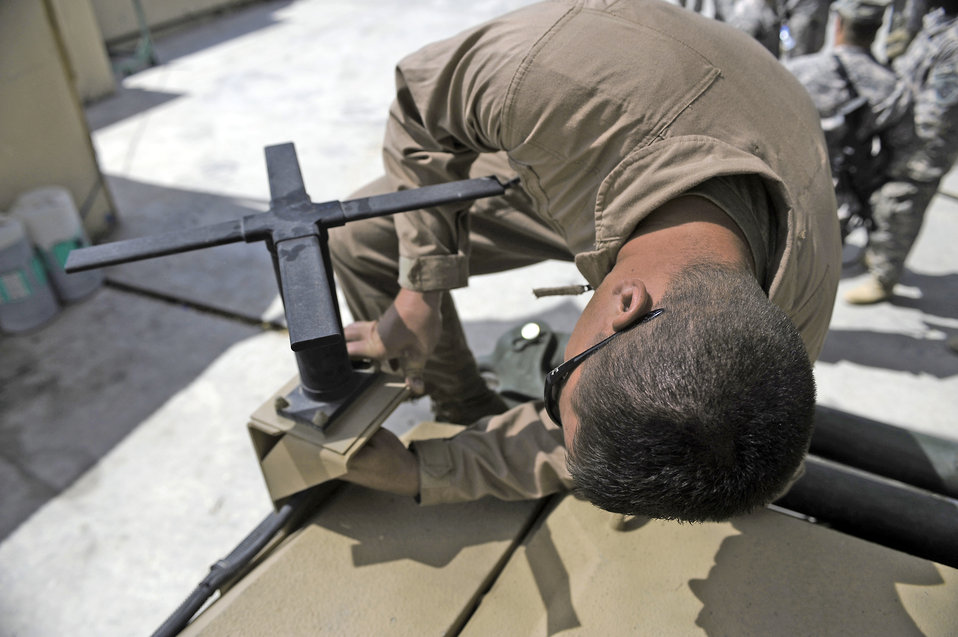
Tactical Comm Airmen keep military ops online, on target

Staff Sgt. Josh Newman, Nangarhar Provincial Reconstruction team satellite systems specialist, performs routine maintenance on a mine-resistant, ambush-protected vehicle May 30 at Forward Operating Base Fenley-Shields, Afghanistan. The PRT is responsible for development and reconstruction projects in Nangarhar Province. The projects are built by local contractors and are designed to improve the livelihood of the people living in the area.